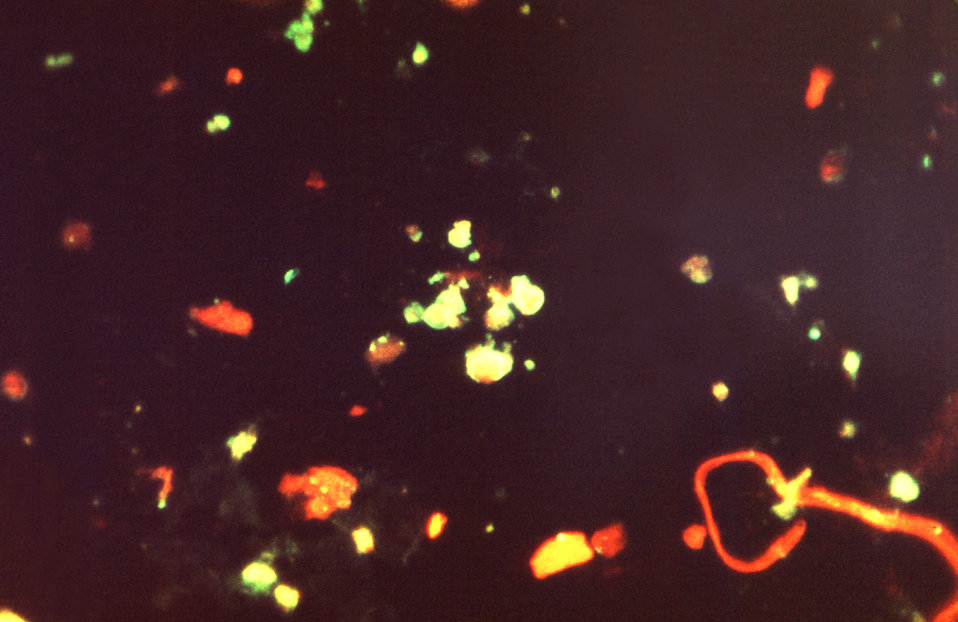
Under a magnification of 560X, this photomicrograph showing the presence of Pneumocystis jirovecii, formerly known as Pneumocystis carinii fungal organisms.